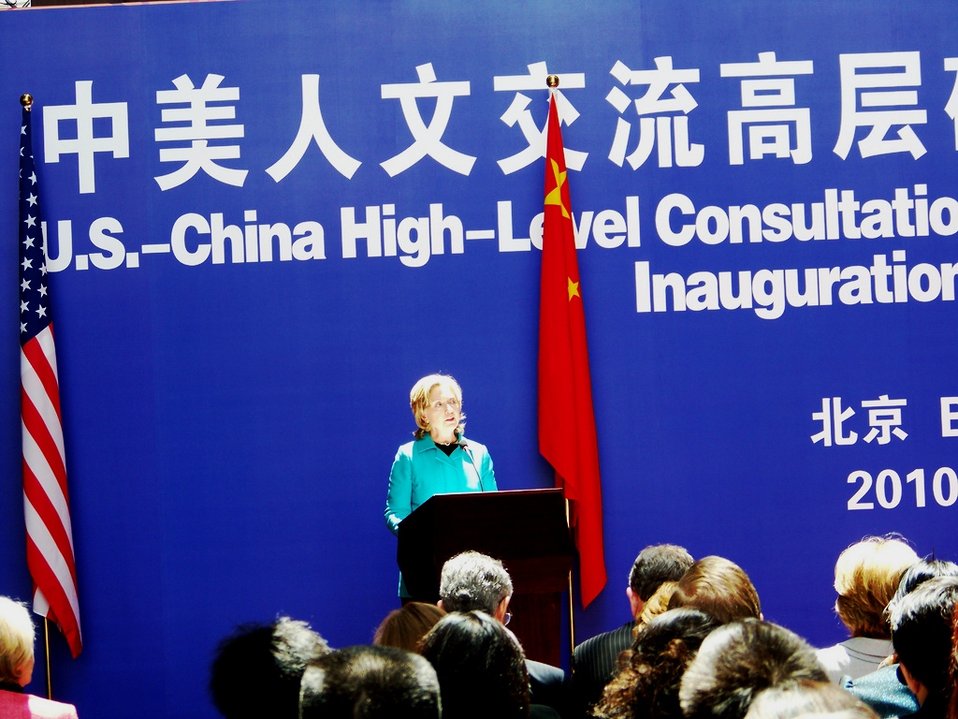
Secretary Delivers Remarks at People-to-People Exchange

U.S. Secretary of State Hillary
Rodham Clinton delivers remarks at the U.S.-China Consultation on People-to-People Exchange Ceremony at the National Center for the Performing Arts in Beijing, China, May 25, 2010.